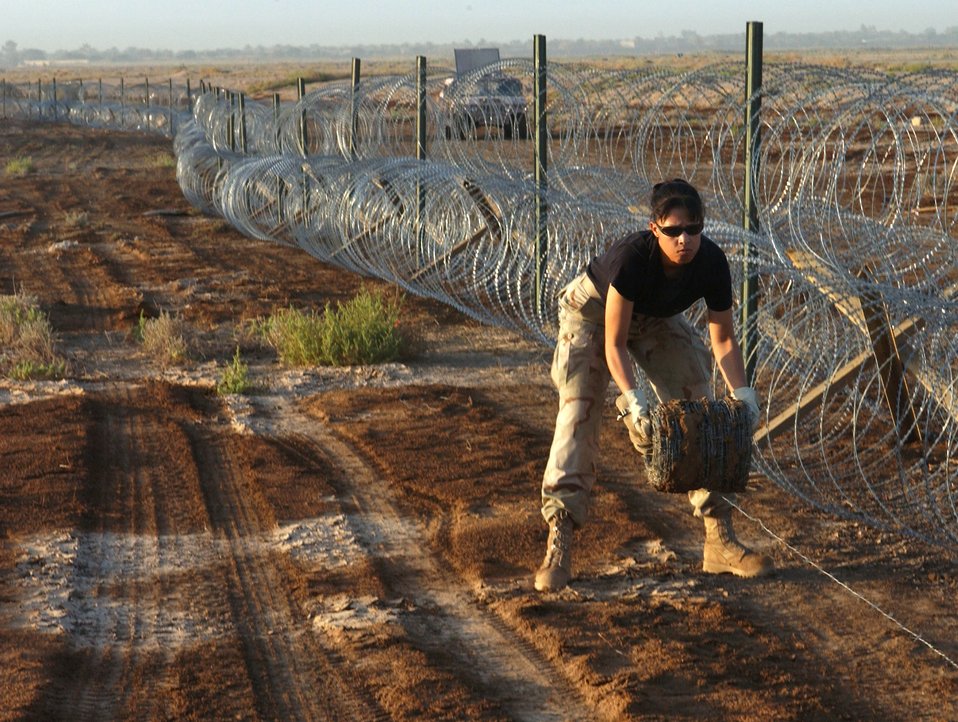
Wired in Baghdad

BAGHDAD, Iraq -- Staff Sgt. Veronica Worman runs Constantine wire and barbed wire along the flightline perimeter here. Volunteers will run more than 36,000 feet wire to help protect people and aircraft at Baghdad International Airport. Sergeant Worman is assigned to the 447th Expeditionary Security Forces Squadron and is deployed from Cannon Air Force Base, N.M.